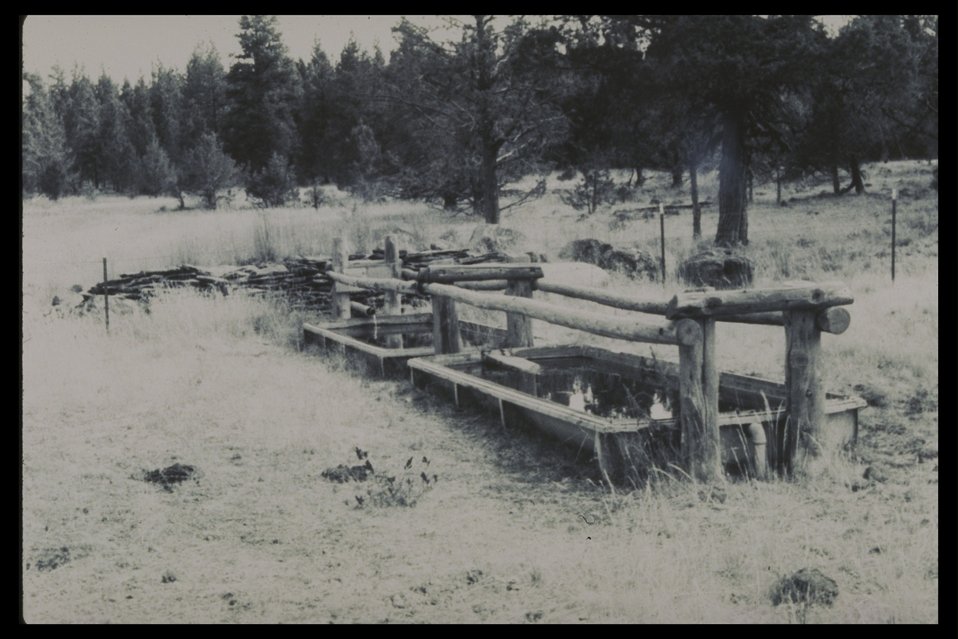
Black & White photo of range water trough improvements.